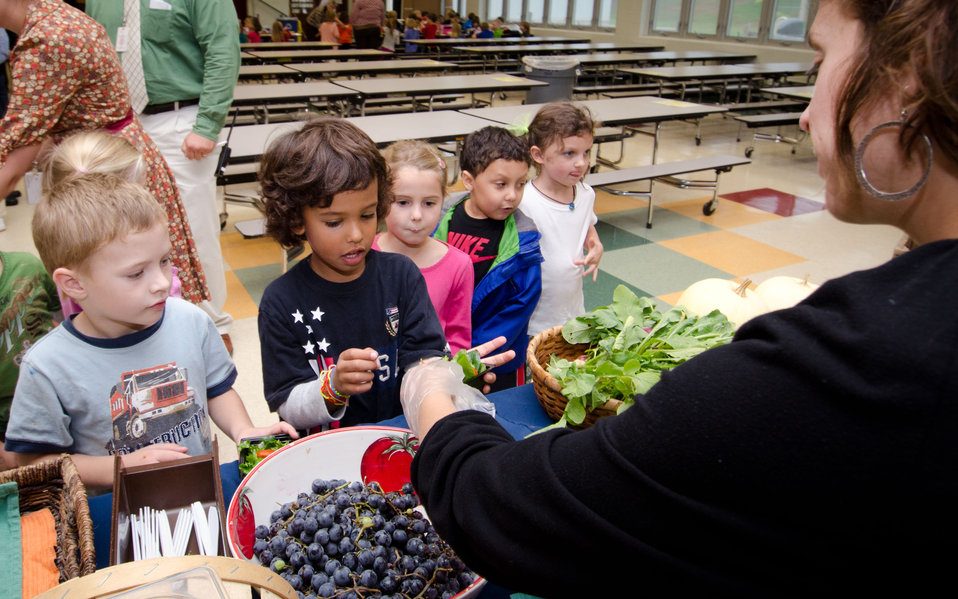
Maple Avenue Market Farm co-owner Sara Guerre (r) invited students to learn about local and interesting varieties of produce such as purple corn on the cob that is used for popping, during a National School Lunch Week event at Nottingham Elementary School in Arlington, VA, on Wednesday, October 12, 2011. Farmers from Bigg Riggs Farm in Hampshire County, WV, and Maple Avenue Market Farm in Vienna, VA were very popular with the students. Today's menu included roasted chicken, roasted butternut squash with dried cranberries, farm fresh mixed lettuce salad, turkey wraps, pita wedges, hot muffins, carrots, Asian pears and more.